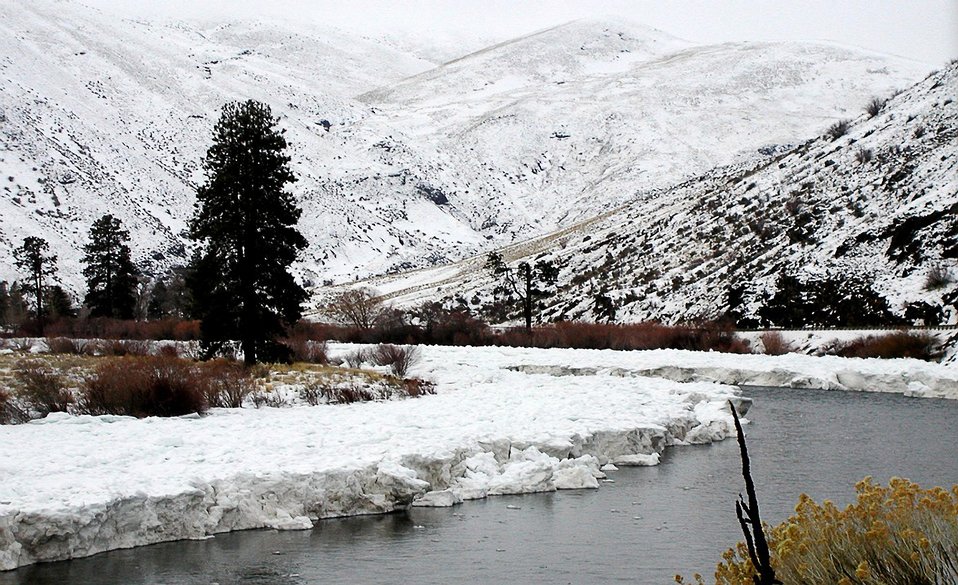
With temperatures remaining in the teens, the ice built up on a river meander which seems to start at the BLM's Big Pine Recreation Site. From here the water and ice wind their way past the giant Roza alluvial plain, where Roza creek now drains to the Yakima River. The ice continues further downstream past the mouth of Burbank Creek and on to the Roza recreation site.